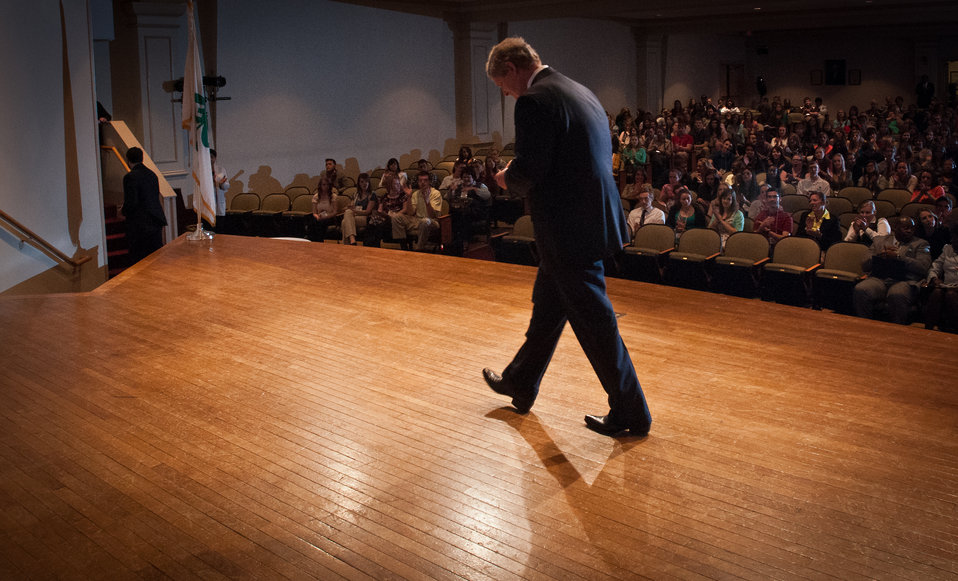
U.S. Department of Agriculture (USDA) Secretary Tom Vilsack exits amid applause, holding a 4-H pin he was given for providing the keynote address and a question and answer session for the approximately 300 4-H youth leaders, from across the nation, as well as U.S. Territories, during the 2013 National 4-H Conference, on Monday, April 8, 2013 in Chevy Chase, MD.